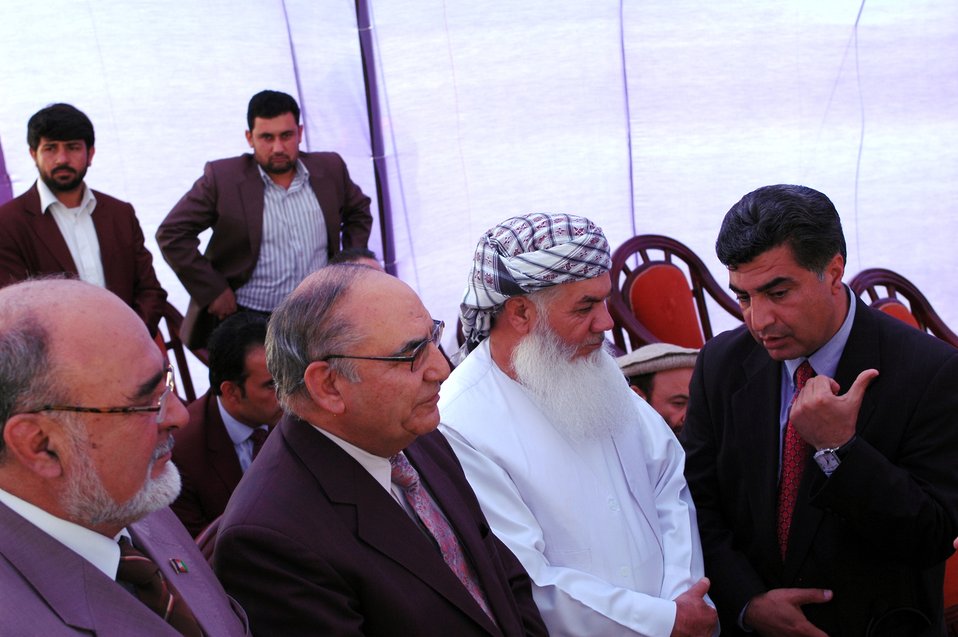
105 MW Tarakhil Power Plant Handover